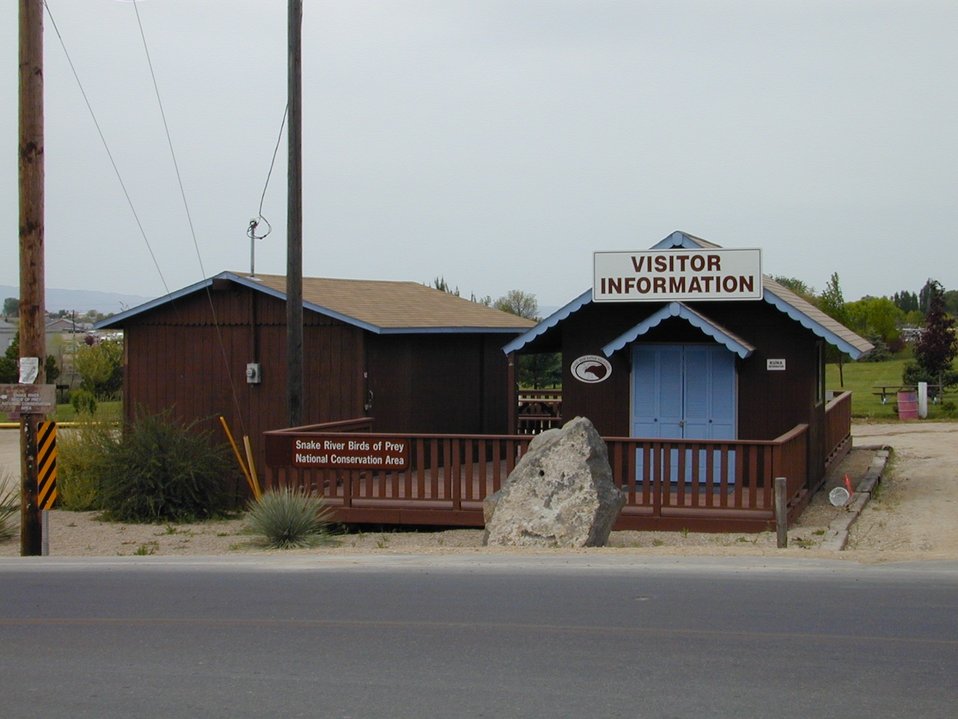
Local Information Center, Kuna, Idaho Birds of Prey Area Snake River Birds of Prey National Conservation Area